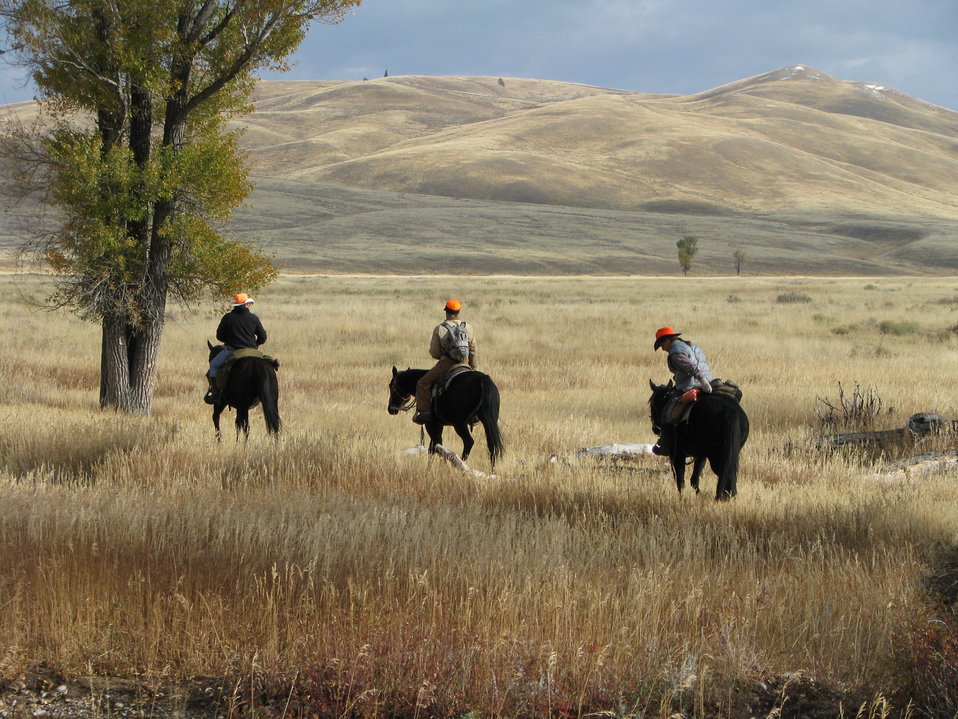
Hunters Head into the Field

Hunters set out on horseback in search of elk on the National Elk Refuge. The Refuge offers opportunities for both bison and elk hunting.